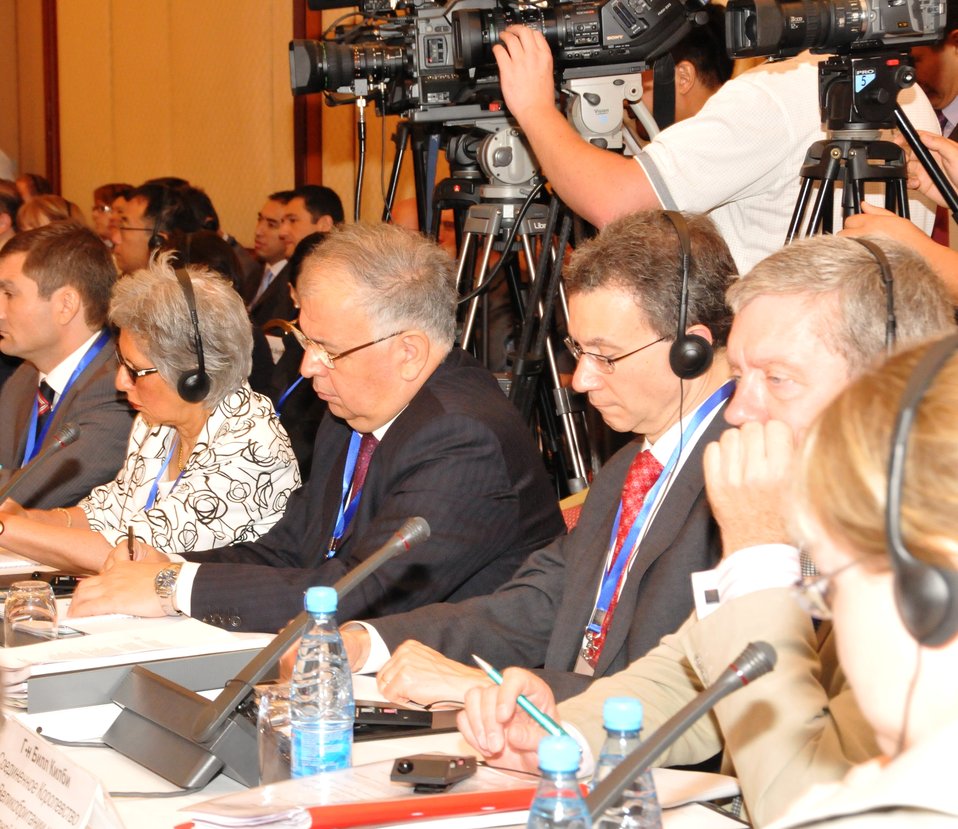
Coordinator Rosenblum Participates in International Donors' Conference for Kyrgyzstan

Coordinator of U.S. Assistance to Europe and Eurasia Daniel Rosenblum participates in the World Bank's International Donors' Conference for Kyrgyzstan in Bishkek, Kyrgyzstan, on July 27, 2010.